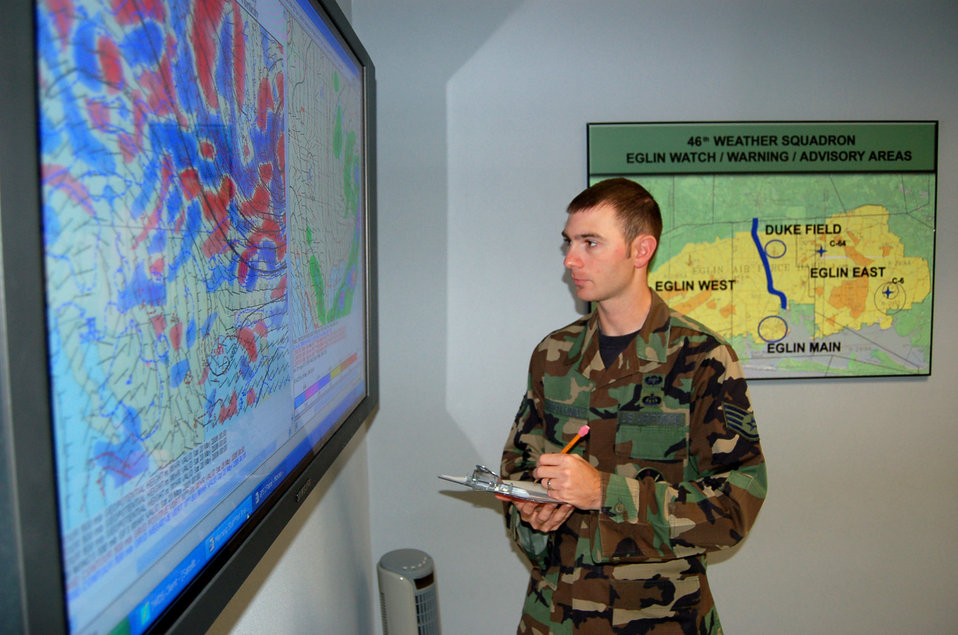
Hurricane response

Weather forecaster Staff Sgt. Mitchell Westlund takes part in a hurricane response exercise hurricane at Eglin Air Force Base, Fla., on Wednesday, May 17, 2006. The 46th Weather Squadron troop said indications are this will be an above average season for storms and that it would be a mistake to take hurricane preparations lightly. With the season right around the corner, from June through November, Eglin held a three-day exercise May 15 through May 17, called